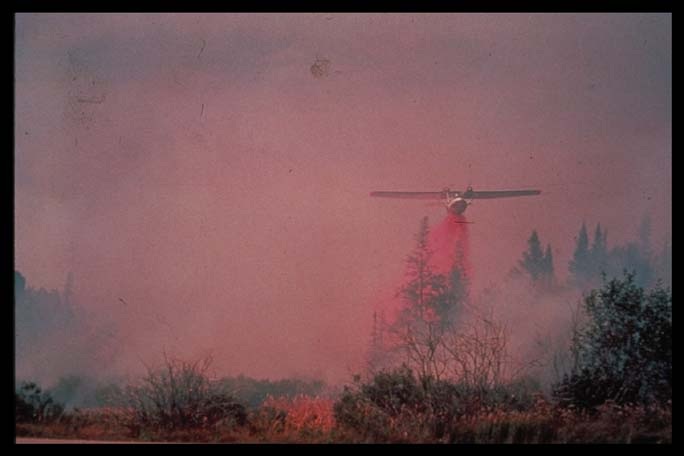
Airtanker drop